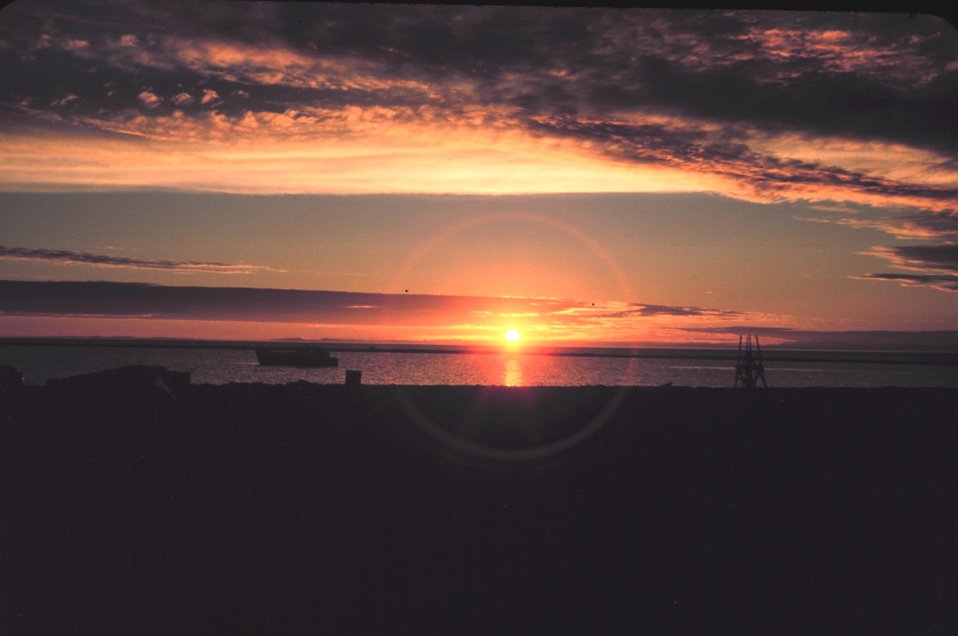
A survey boat and hydro signal frame a late summer sunset